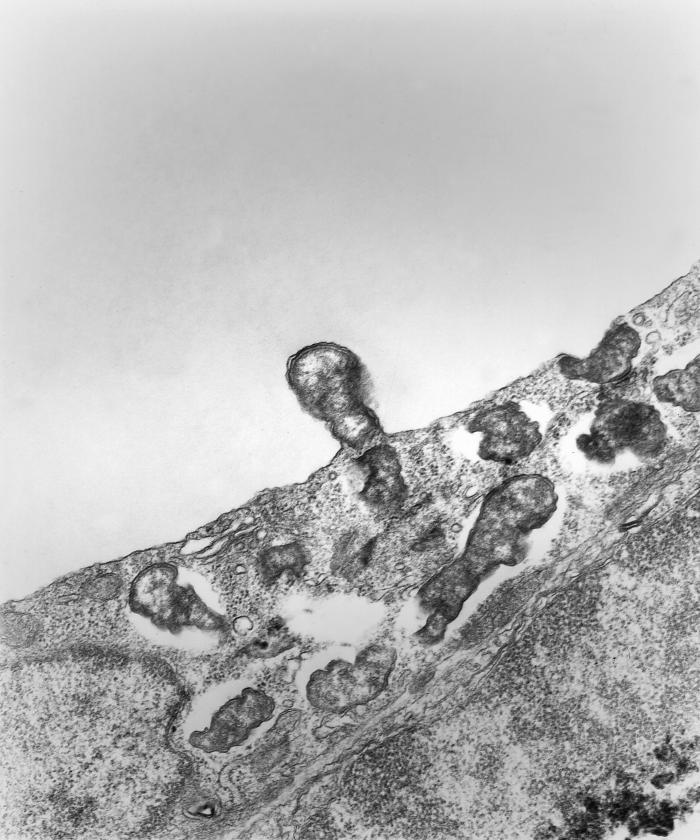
This 1978 transmission electron micrograph (TEM) depicted a brain capillary of a mouse that had been experimentally infected intravenously with Orientia tsutsugamushi rickettsial micro-organisms. This TEM revealed that one organism was budding from the luminal surface of a hypertrophic capillary endothelial cell, still covered by a third layer consisting of the host cell's plasma membrane. Others are visible free within the endothelial cell's cytoplasm.